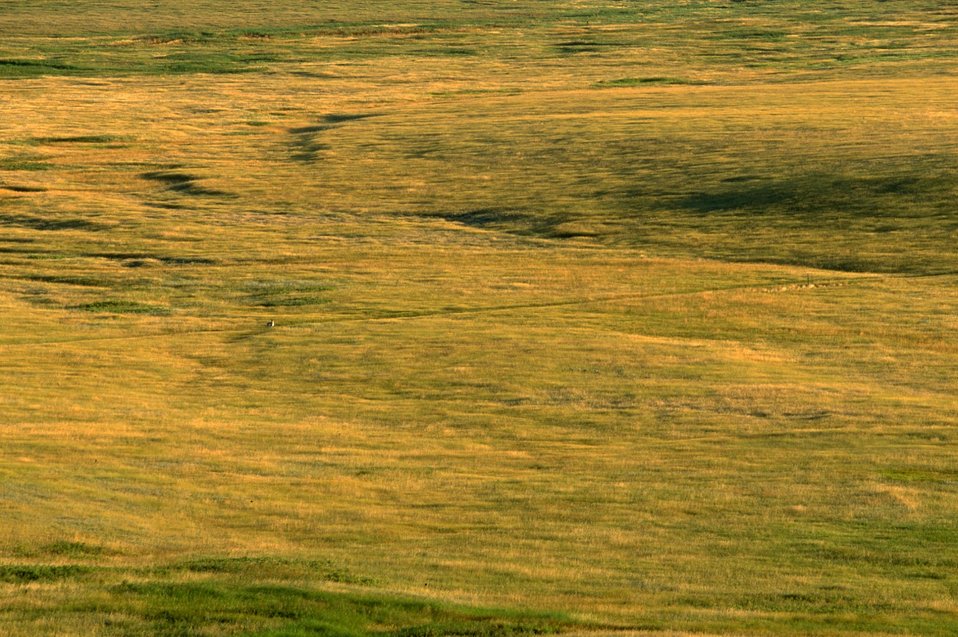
Grassland Vista